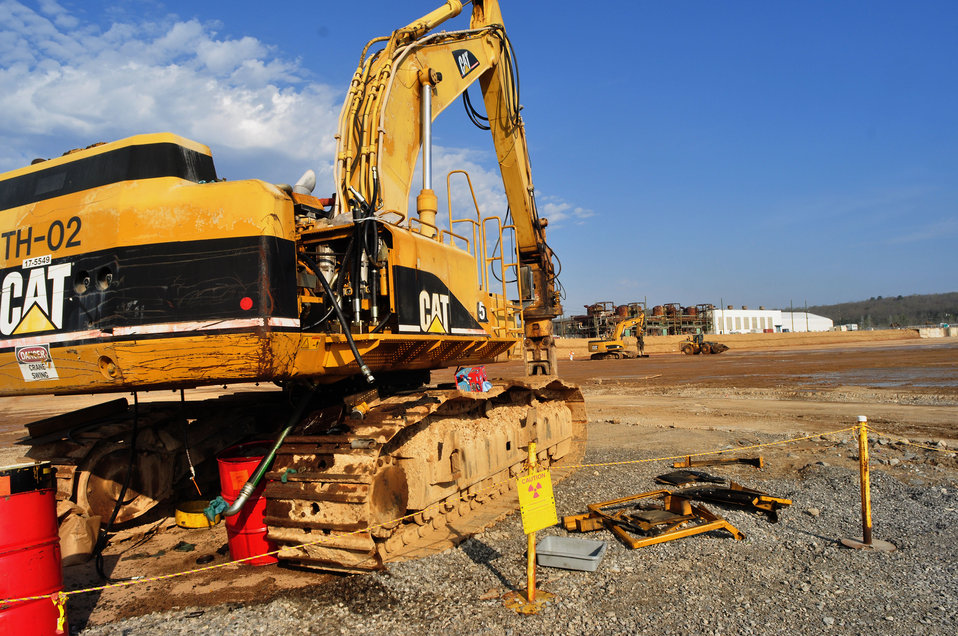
DandD work K-25 Oak Ridge

13-034 DOE photo Lynn Freeny 4-9-2013